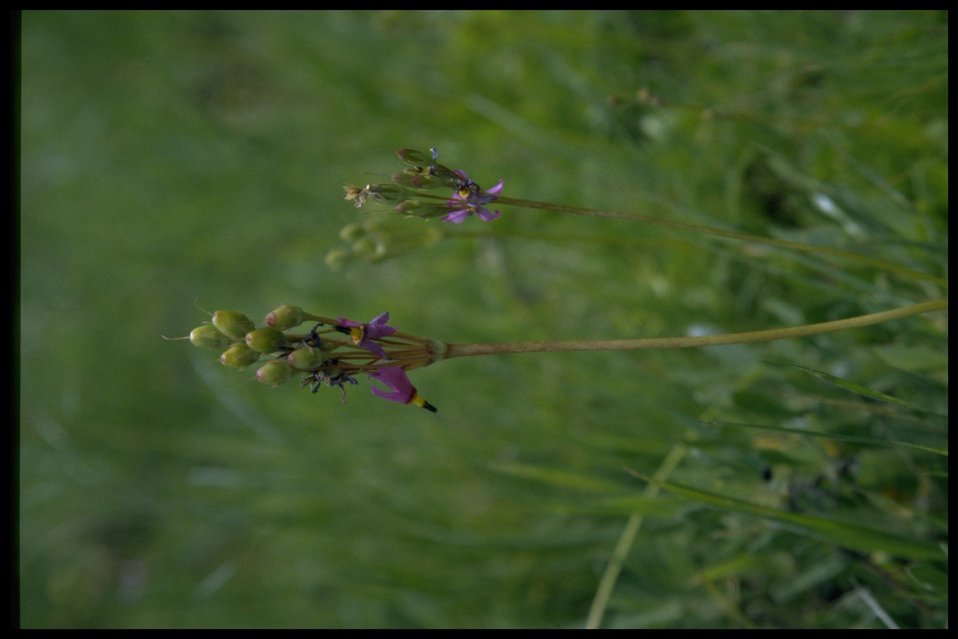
Medium shot of Shooting Star flower and fruit.